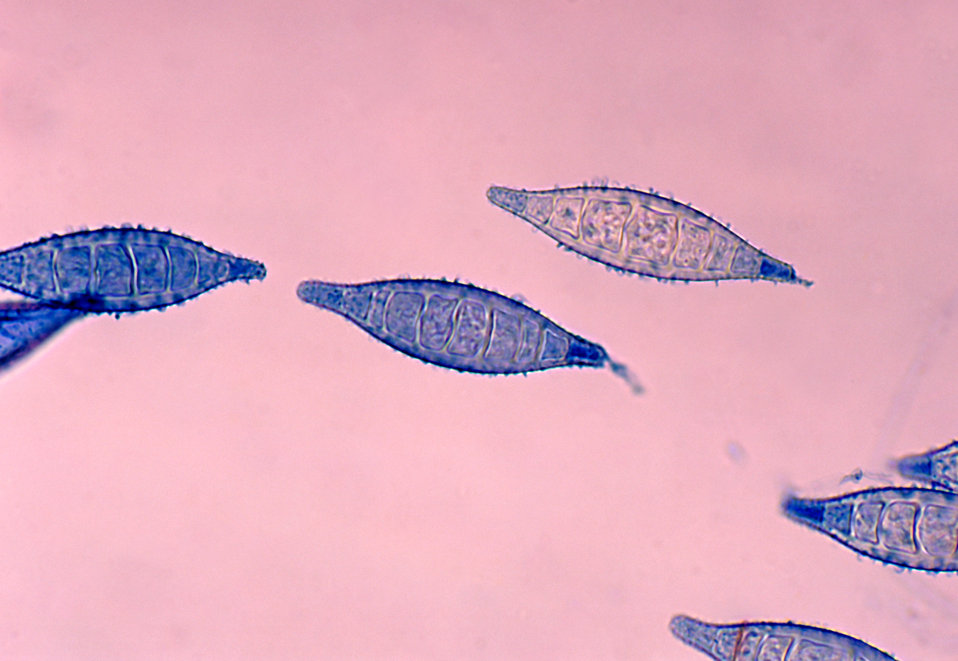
This photomicrograph shows a number of Arthroderma otae, formerly Nannizzia otae, fungal macroconidia.